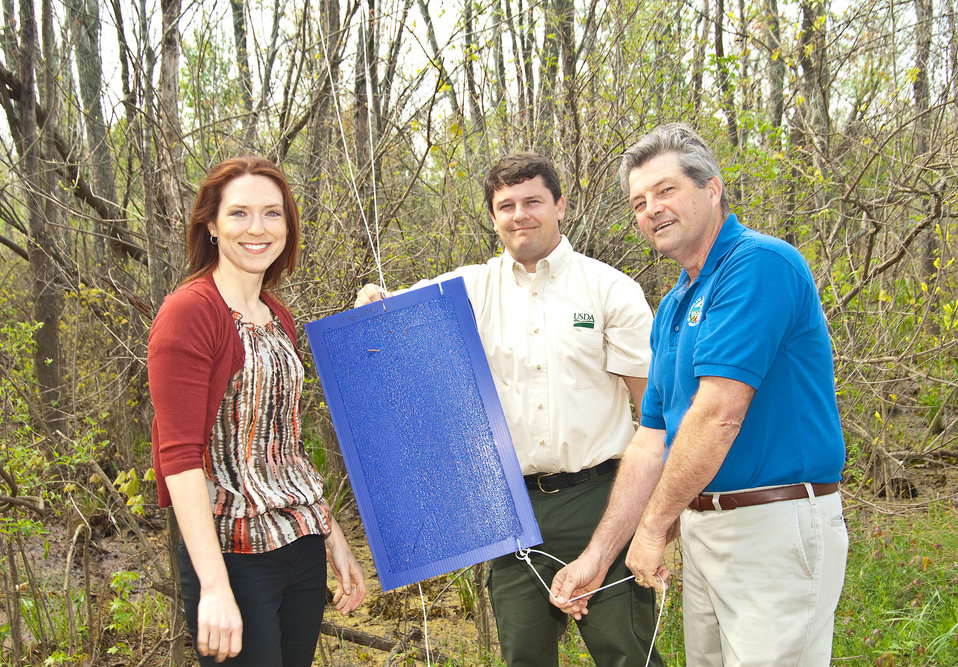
Agriculture Deputy Under Secretary for Marketing and Regulatory Programs Rebecca Blue, Plant Health Safeguarding Specialist Joseph Vulovich and Maryland Agriculture Secretary Bubby Hance hang one of the first emerald ash borer (EAB) survey traps for the season in the trees at the Patuxent Wetlands Park in Anne Arundel County, MD, on Tuesday, April 10, 2012. These large, purple traps are used to identify and track EAB and assist officials in developing strategies to help prevent the spread of this invasive, ash-killing beetle.